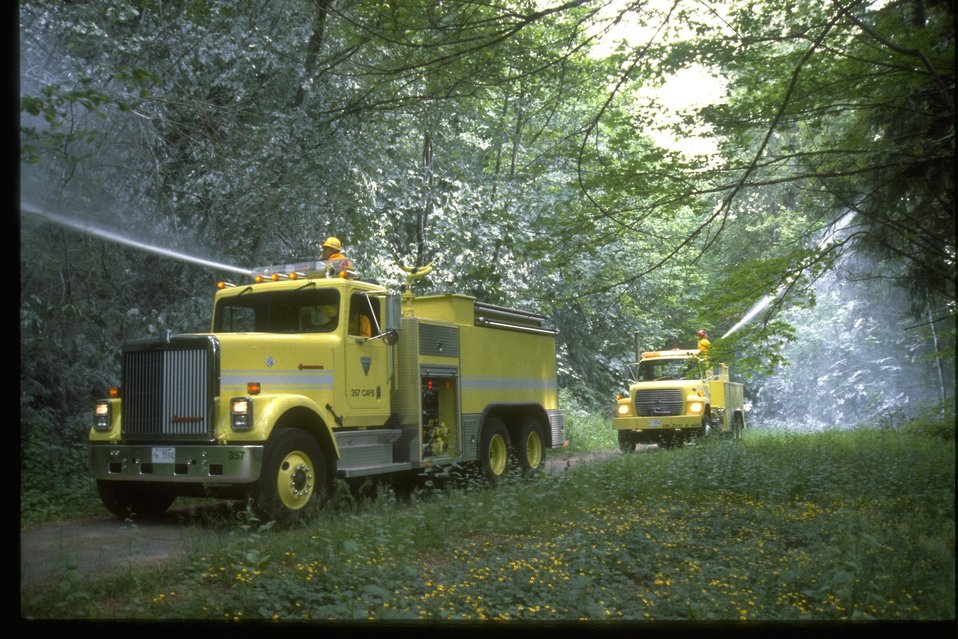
Fire engines spray foam.